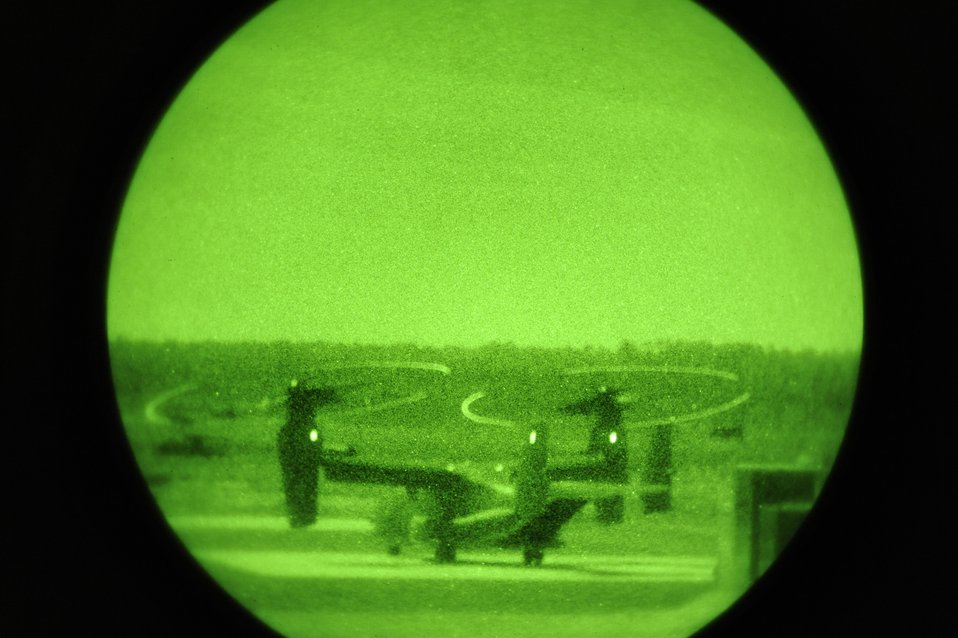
Emerald Warrior

A CV-22 Osprey lands Feb. 9 to deploy a quick reaction force during an Emerald Warrior Exercise training scenario. The quick reaction force will advance forward to identify where enemy fire came from and engage. Air Force Special Operations Command officials are hosting Emerald Warrior to train forces in combat scenarios. The exercise runs until Feb. 13.